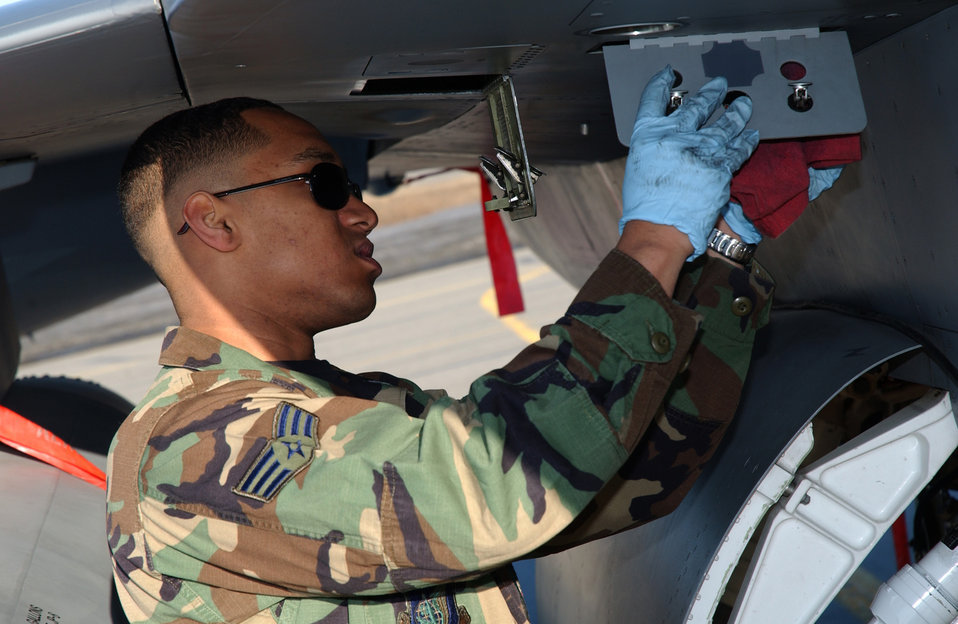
Falcon panal

EIELSON AIR FORCE BASE, Alaska -- Senior Airman Stanley Wilson cleans panels of an F-16 Fighting Falcon during preflight operations supporting exercise Cope Thunder 05-1 here April 25. Airman Wilson is a crew chief from the 35th Aircraft Maintenance Squadron at Misawa Air Base, Japan.